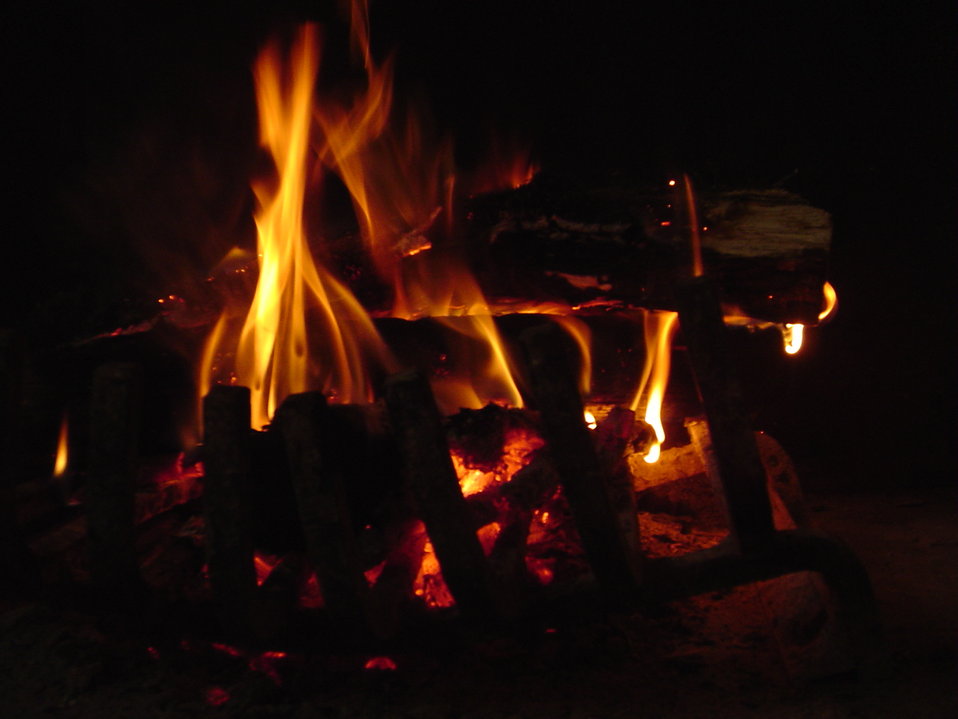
Campfire 0001